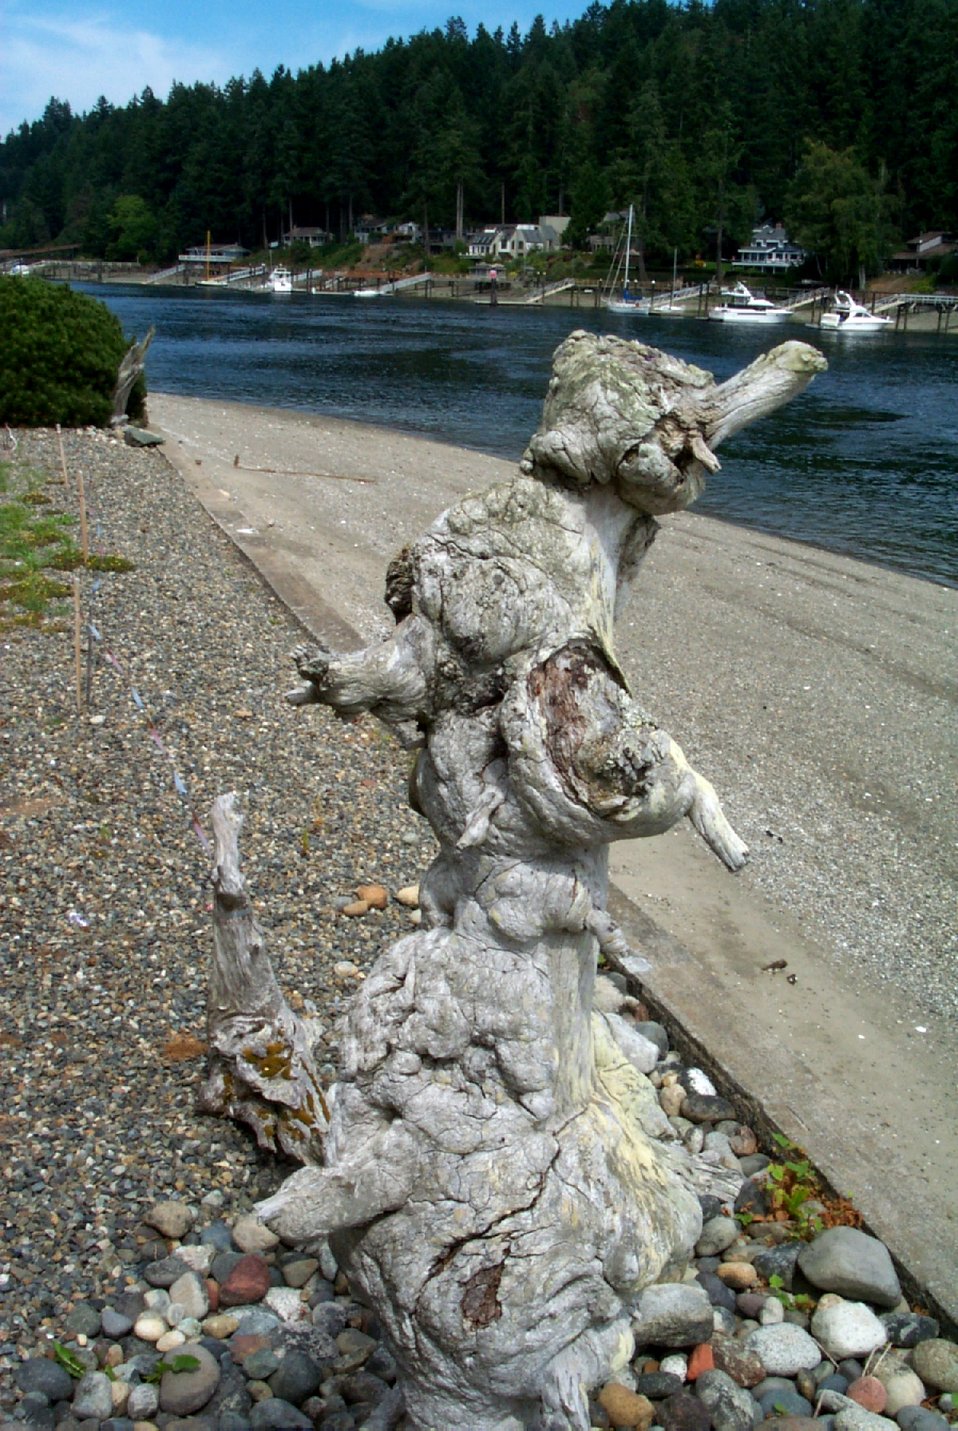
Gig Harbor as seen over burled cedar driftwood.